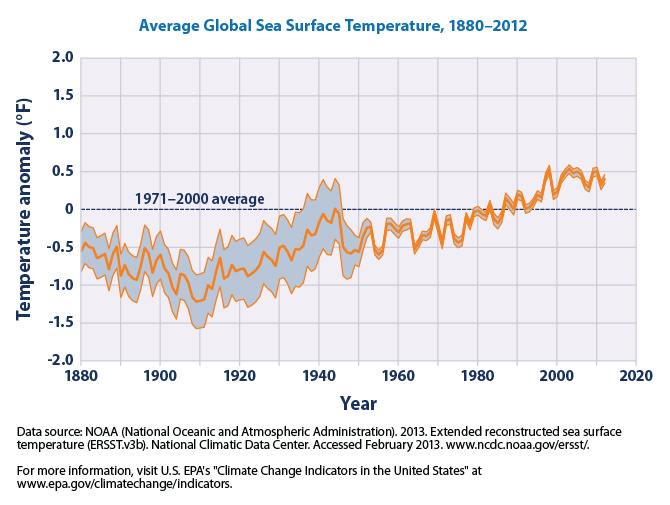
Climate Indicators - Global Average Sea Surface Temperature

Did you know sea surface temperatures have been higher during the past three decades than at any other time since reliable observations began in the late 1800s?